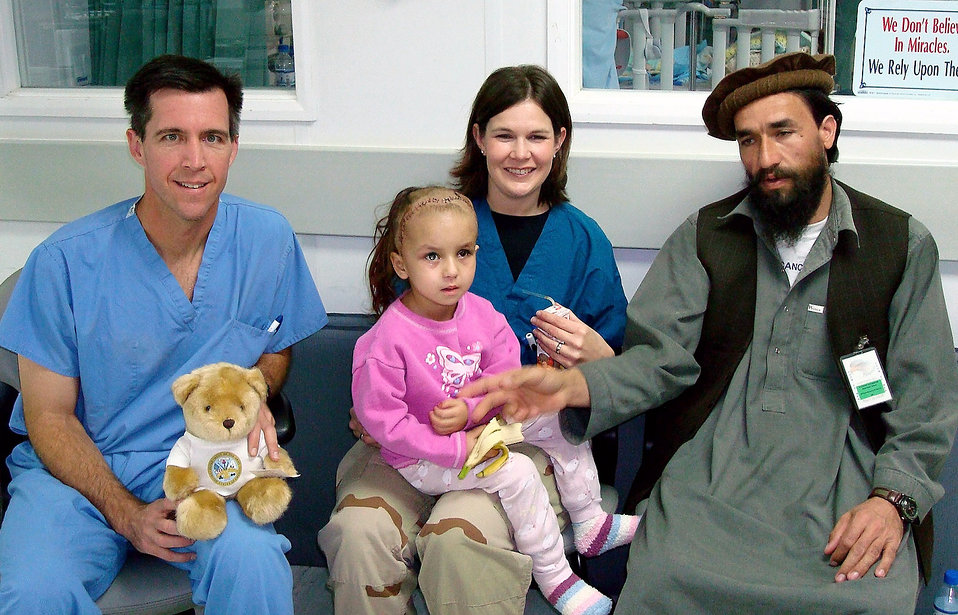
Lackland doctor leaves Afghan legacy

Lt. Col. (Dr.) Randall McCafferty, a neurosurgeon deployed from Lackland Air Force Base, Texas (left); and Capt. Stacy Friesen, a neonatal intensive care nurse deployed from Travis Air Force Base, Calif.; visit with Zahara and her father at the Craig Joint Theater Hospital, Afghanistan. Zahara was injured and received several surgeries at the hospital.